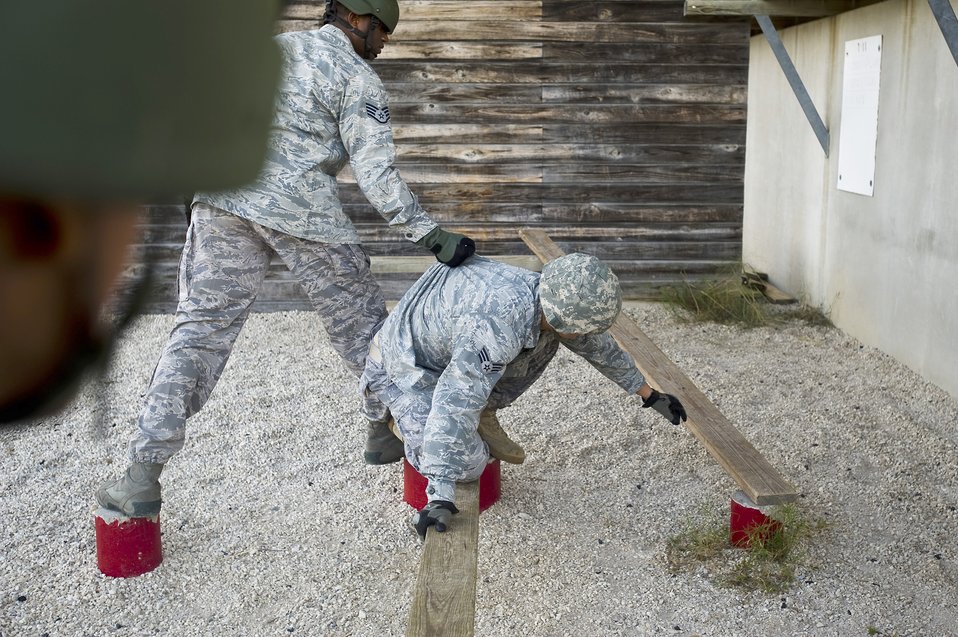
Combat Leadership Course

Staff Sgt. Marcus Thompson helps Senior Airman Daniel West reach for a plank Oct. 22, 2010, at Camp Bullis, Texas, during the Combat Leadership Course.